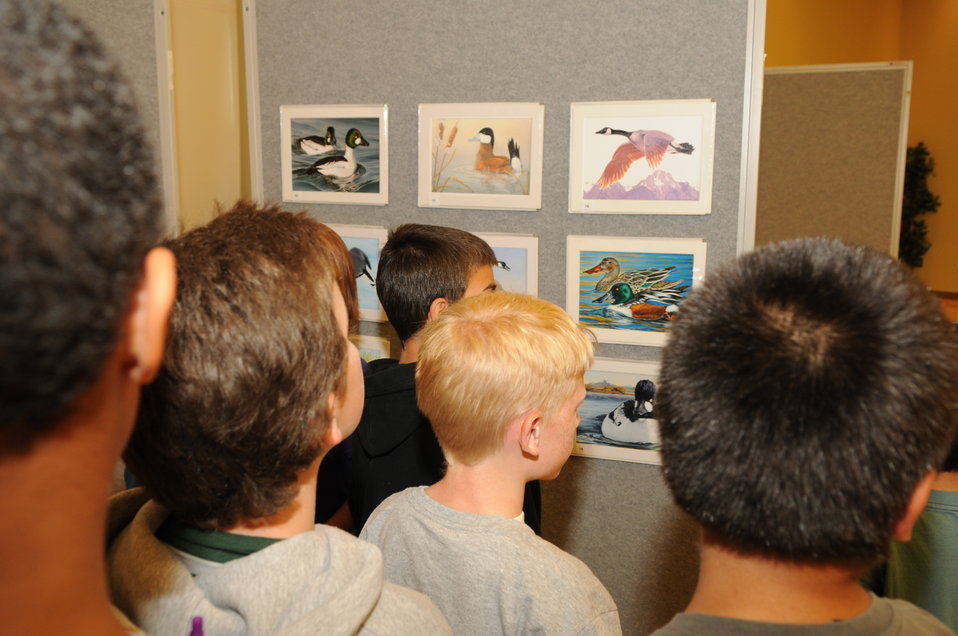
Youth Outreach

The U.S. Fish & Wildlife Service sponsored the 2012 Federal Duck Stamp Art Contest September 28 and 29 in Ogden, Utah, at Weber State University. A panel of five judges was responsible for choosing the art work used to design the 2013-2014 Migratory Bird Hunting and Conservation Stamp.